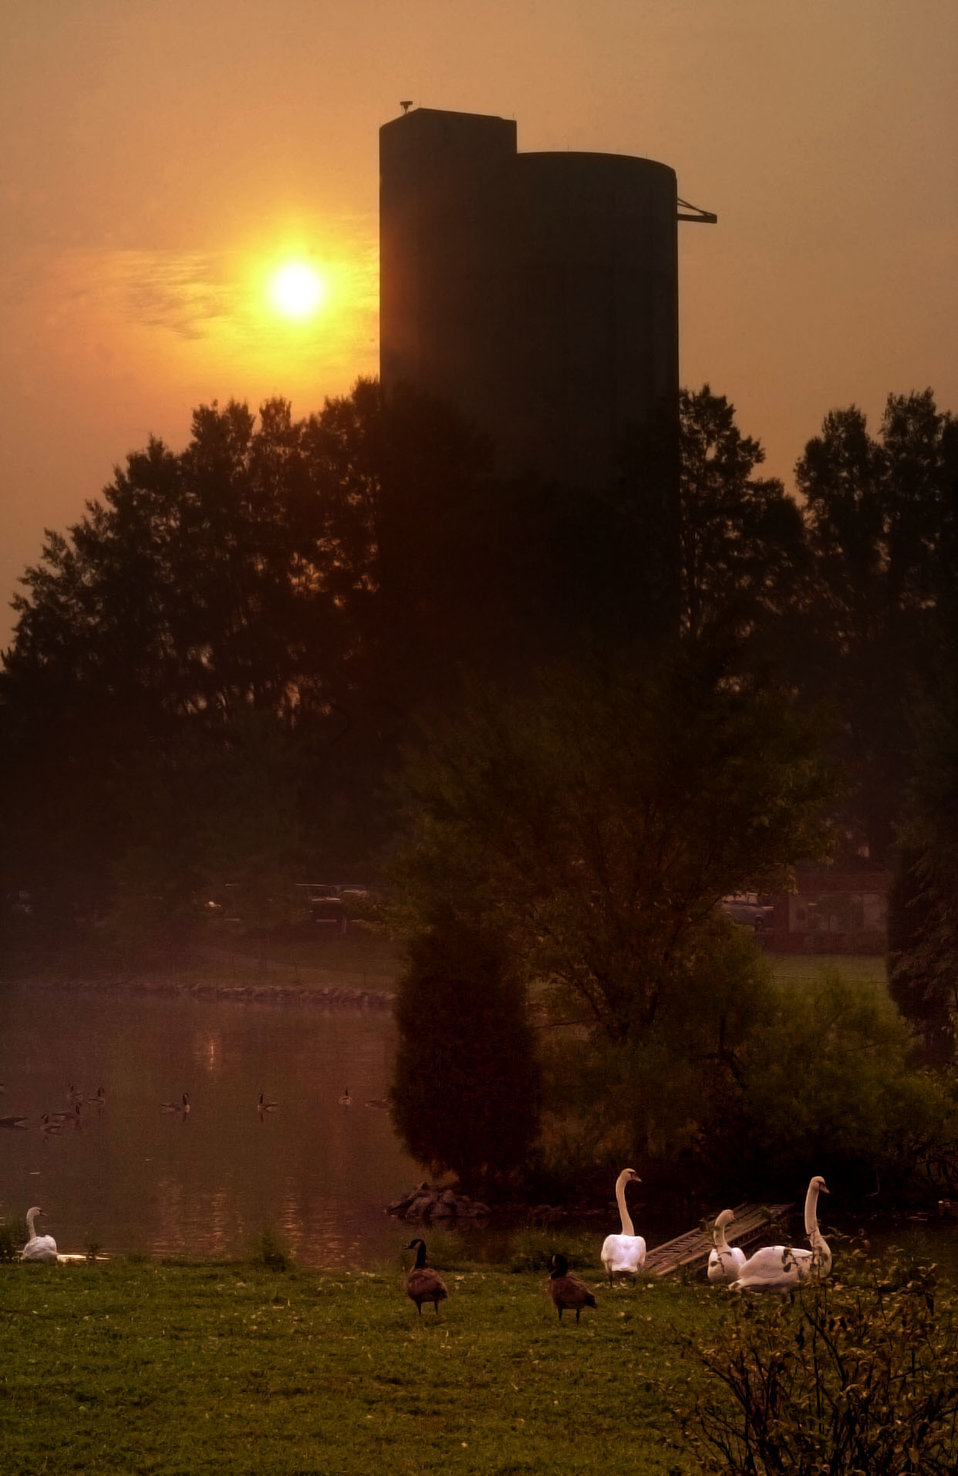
Oak Ridge National Lab. ORNL Sunrise Oak Ridge

00-370-0023 DOE photo by Lynn Freeny 2000 Oak Ridge Tennessee